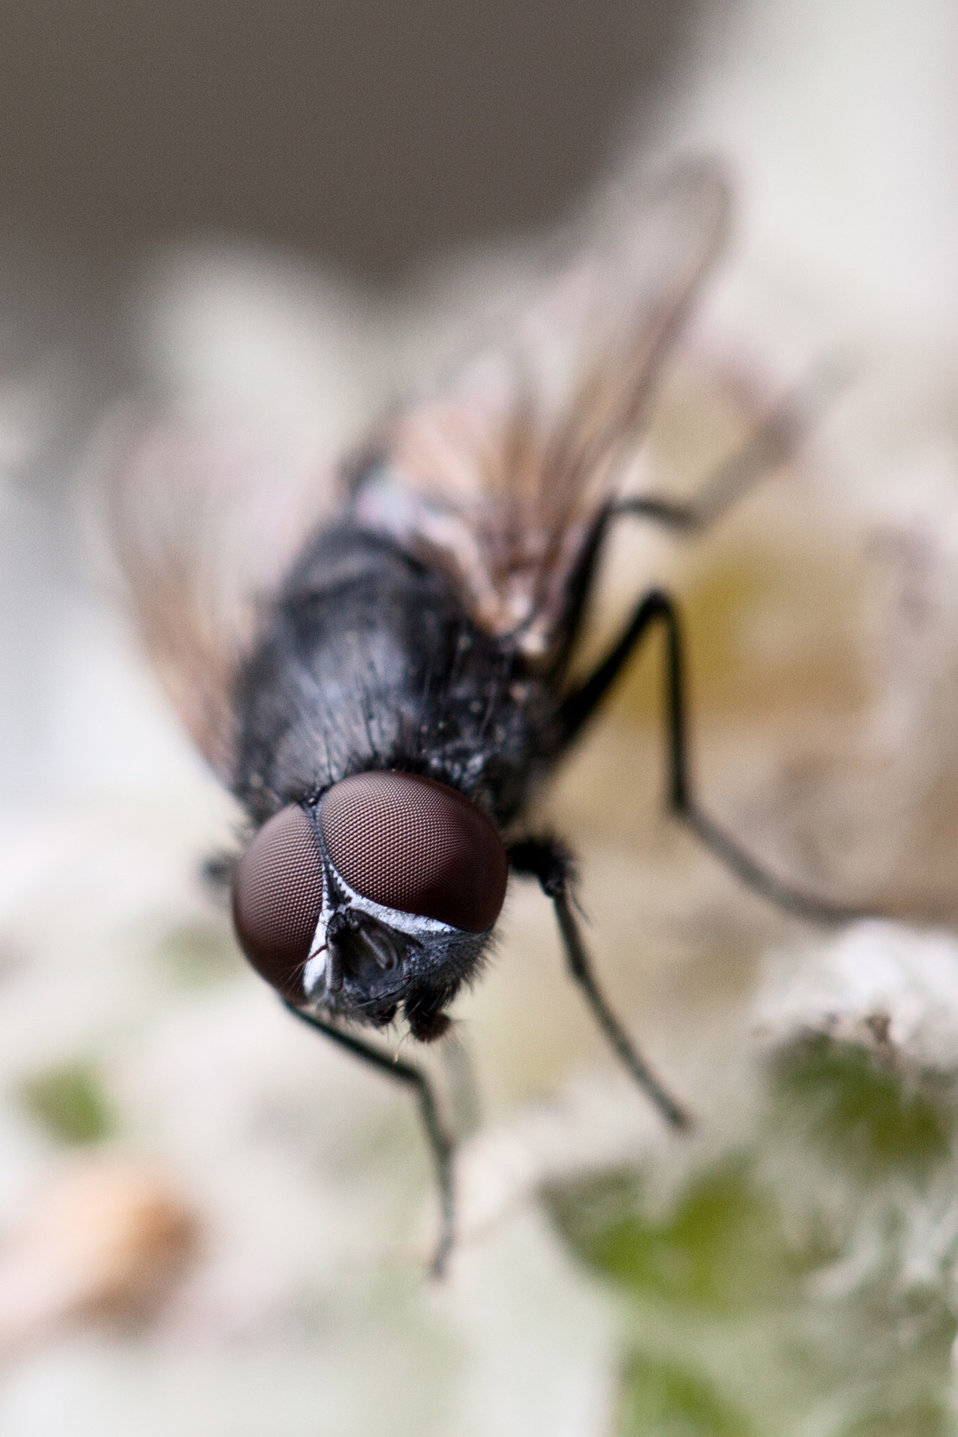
Macro of a fly

Macro photo of a fly.